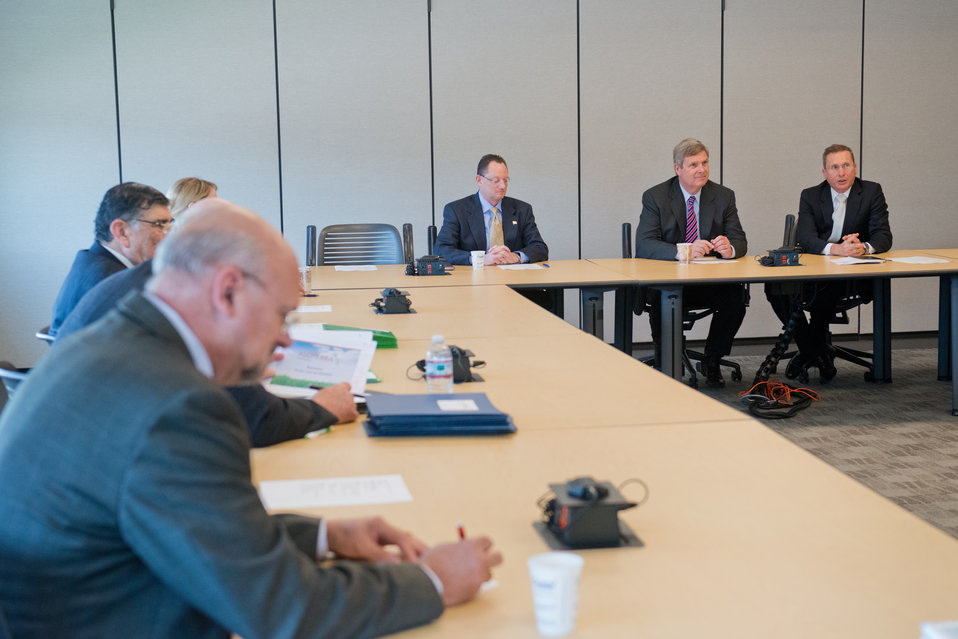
G.E. Aviation Marketing Executive Tom Lodge (right) and Chief Marketing Officer Laurent Rouaud (left) brief Agriculture Secretary Tom Vilsack (center) at the company’s Learning Centre in suburban Cincinnati, OH on Wednesday, June 27, 2012. Secretary Vilsack was in Ohio to highlight the U.S. Department of Agriculture’s (USDA) collaboration with the Ohio Aerospace Institute, air carriers and producer groups to develop a Midwest-regional approach to providing renewable jet fuel at GE Aviation’s Cincinnati-area facilities.